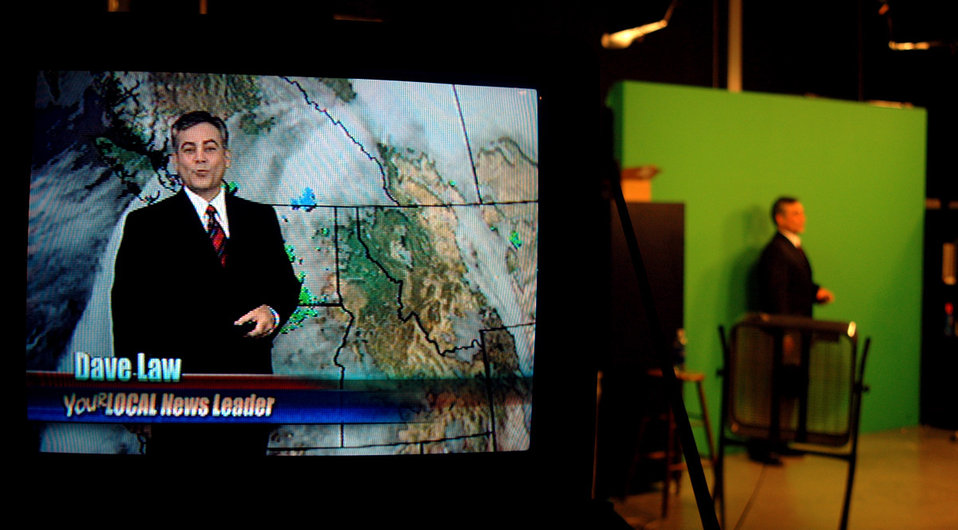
Washington weatherman

FAIRCHILD AIR FORCE BASE, Wash. (AFPN) -- Retired Master Sgt. Dave Law, broadcast weatherman, KHQ6, uses a